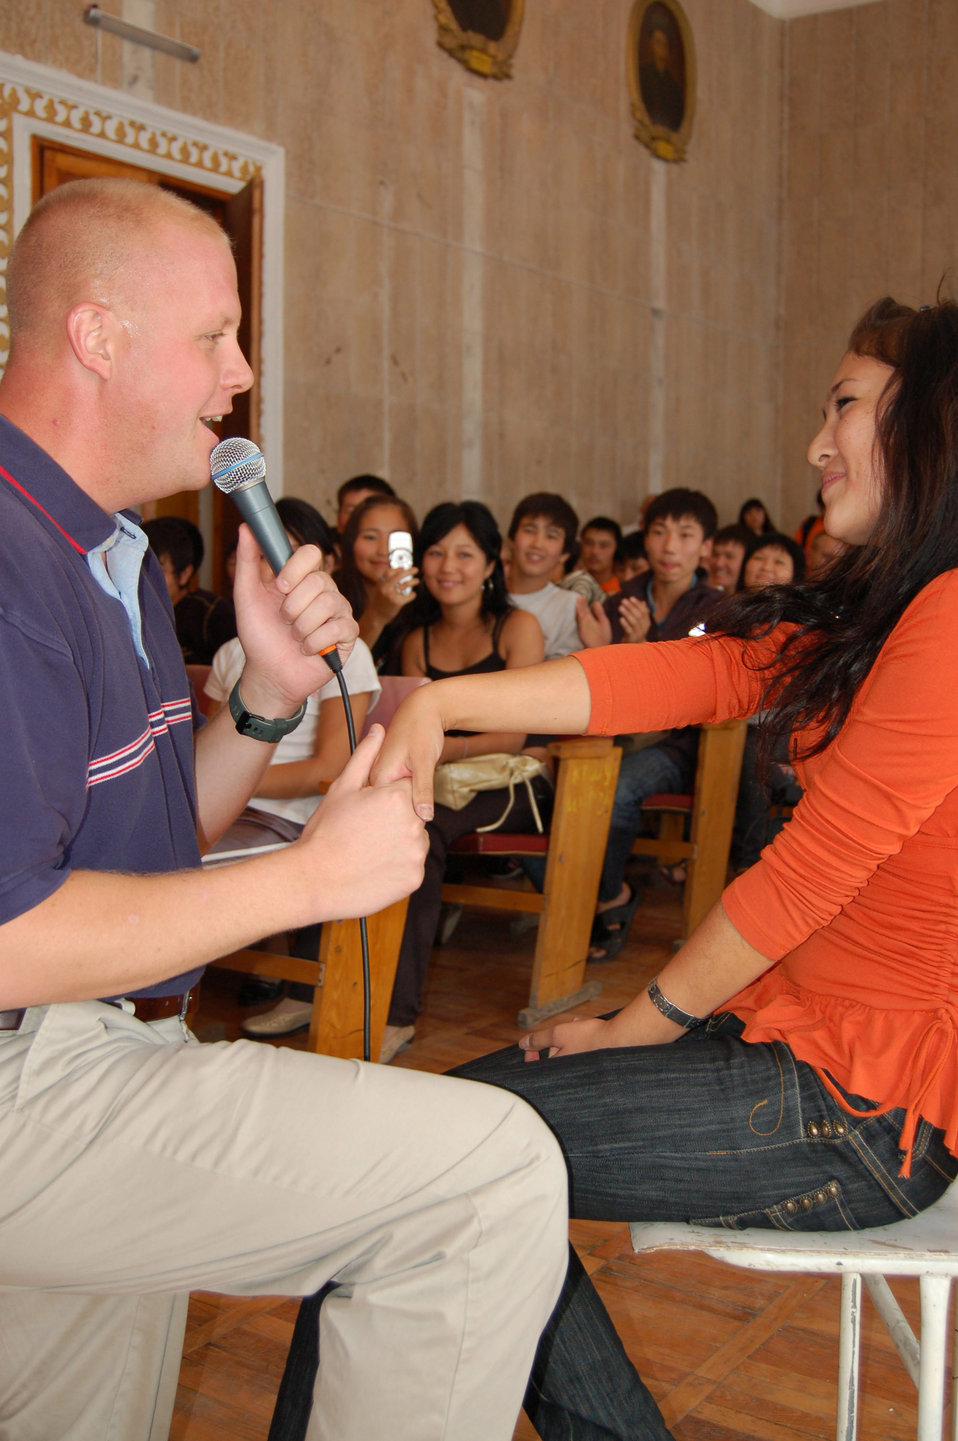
Band members, Kyrgyz citizens share culture through music

Master Sgt. Ryan Carson serenades a Kyrgyz girl at the Bishkek Musical College during a Sept. 10 performance at the Bishkek Musical College in Krygyzstan. During their eight-day tour at Manas, the U.S. Air Forces Central Band Yuma performed 10 concerts at local schools, villages and orphanages, as well as on base for coalition servicemembers.